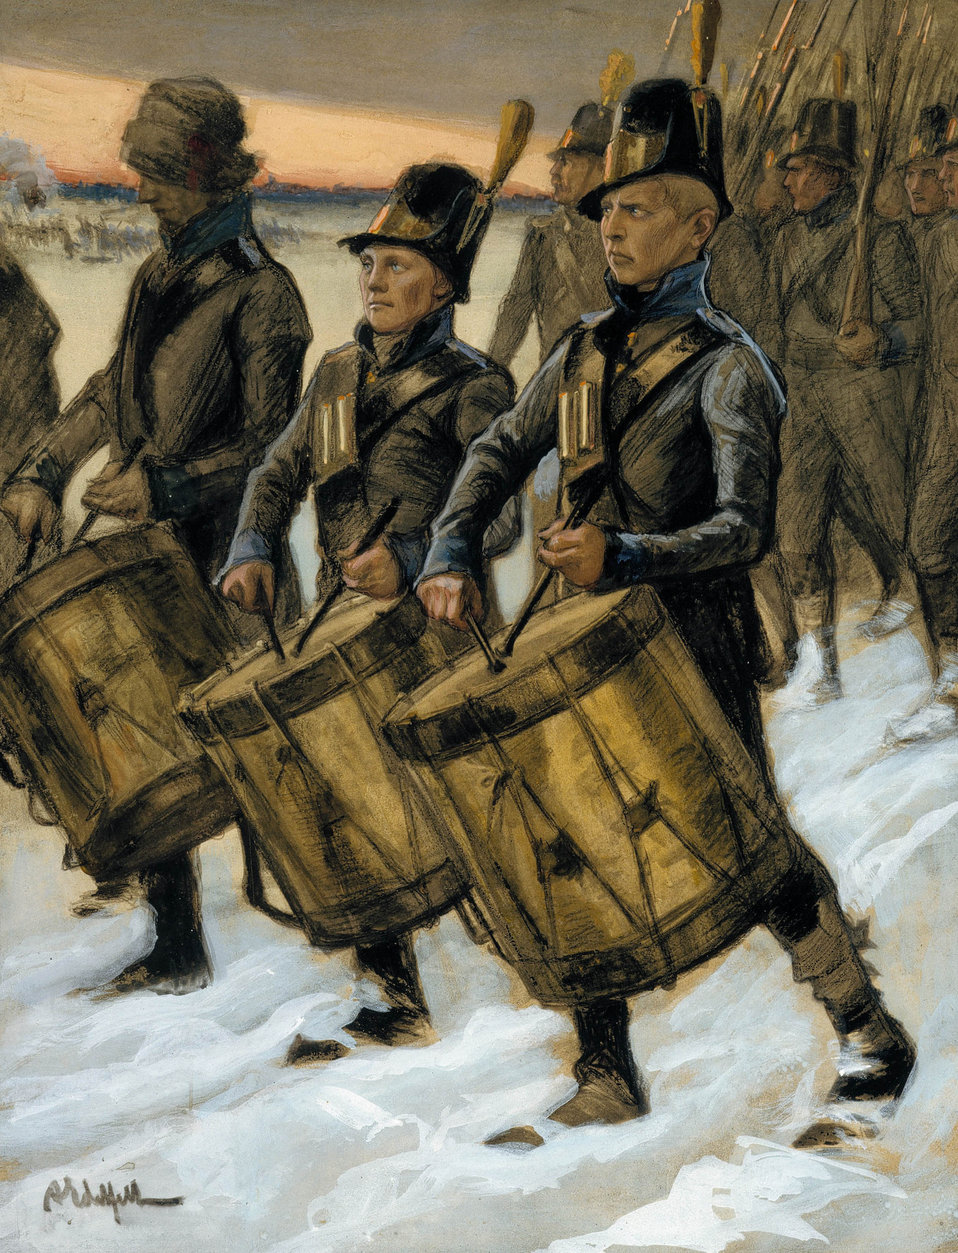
Albert Edelfelt - Originaalipiirustus Vänrikki Stoolin tarinain kuvitukseen